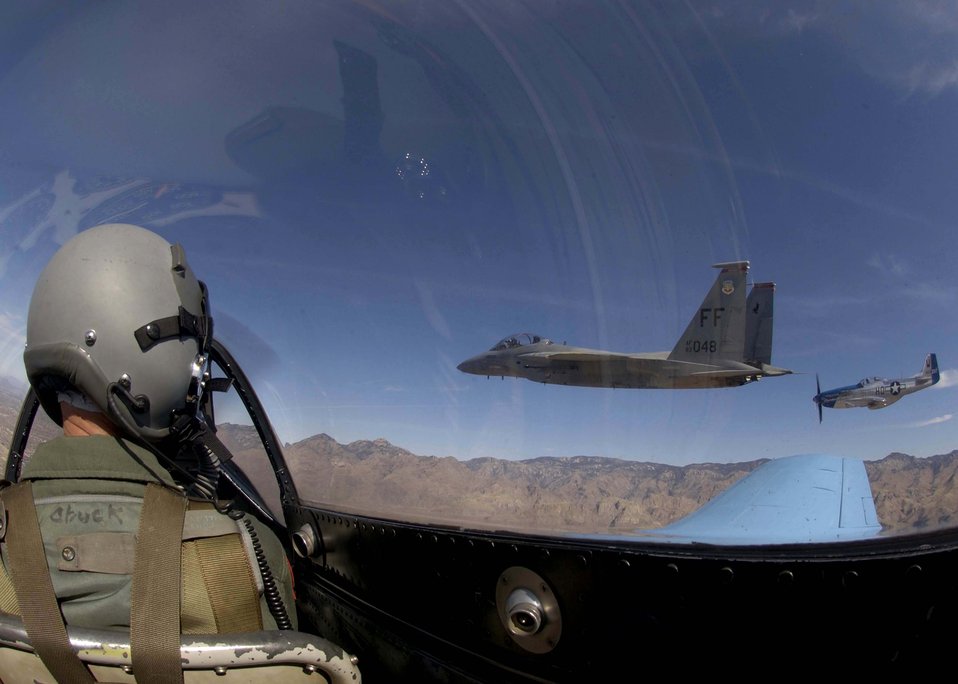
Heritage flight

An F-15 Eagle and a P-51 Mustang fly in formation along with another P-51 Mustang over Davis-Monthan Air Force Base, Ariz., Sunday, March 5, 2006, during the 2006 Heritage Conference. The conference combines different U.S. aircraft from more than 60 years of aviation history to ensure certification in performing air shows worldwide.